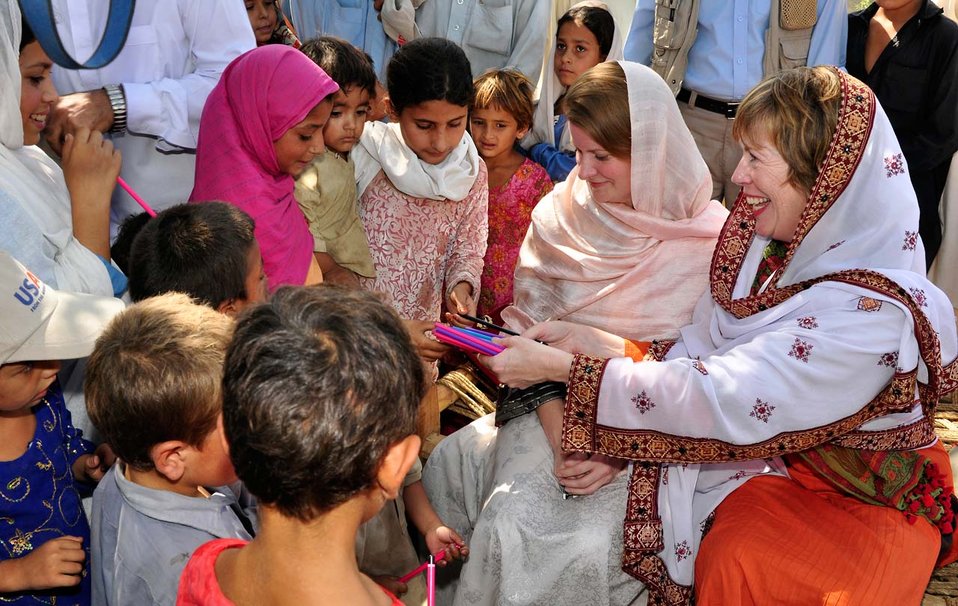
Dr. Marilyn Wyatt's Visit to the Flood-affected Farming Communities in Khyber Pakhtunkhwa